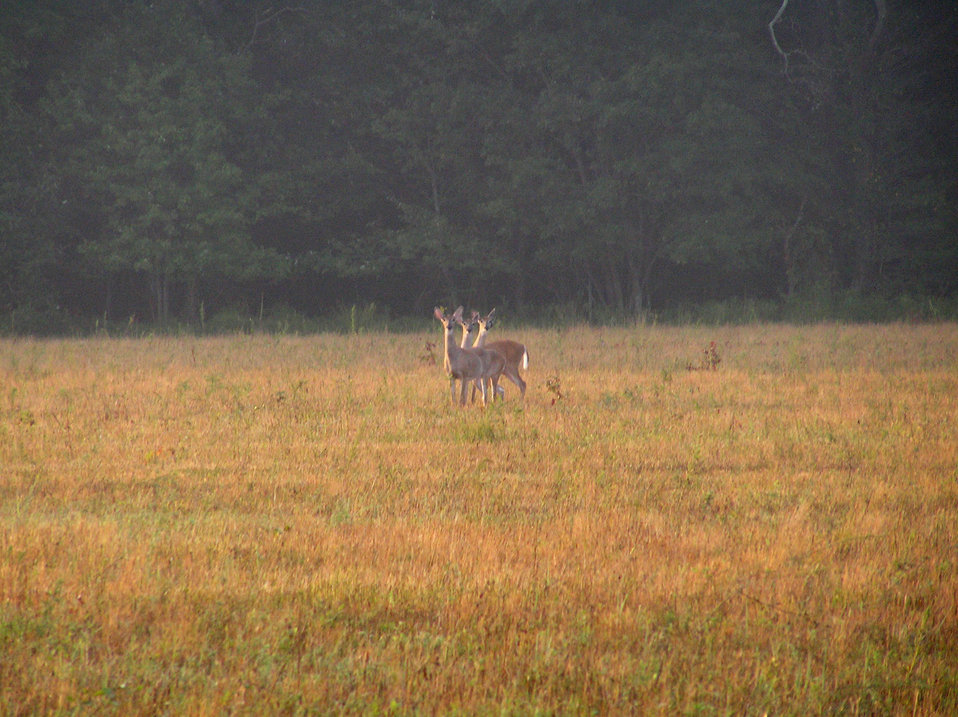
White-tailed deer

Rappahannock River Valley National Wildlife Refuge in Virginia.